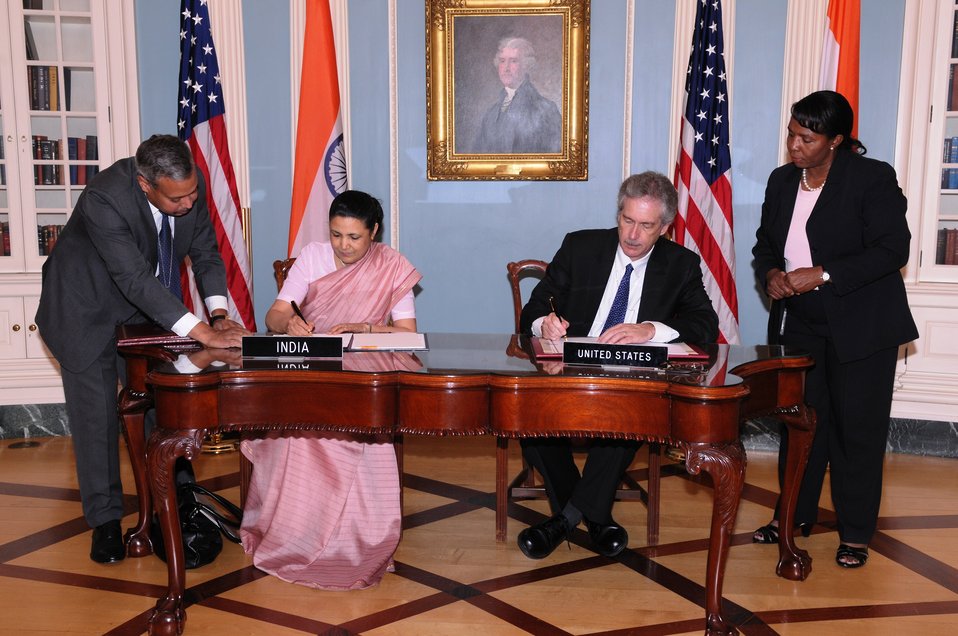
Under Secretary Burns and Indian Ambassador to the U.S. H.E. Meera Shankar Sign the U.S.-India Agreement for Nuclear Cooperation Conclusion of Reprocessing Arrangements and Procedures

U.S. Under Secretary of State for Political Affairs William J. Burns (right) and Indian Ambassador to the United States H.E. Meera Shankar (left) sign the Arrangements and Procedures Pursuant to Article 6 (iii) of the Agreement for Cooperation Concerning Peaceful Uses of Nuclear Energy regarding the reprocessing of U.S.- obligated nuclear material in India at the U.S. Department of State in Washington, D.C., on July 30, 2010.